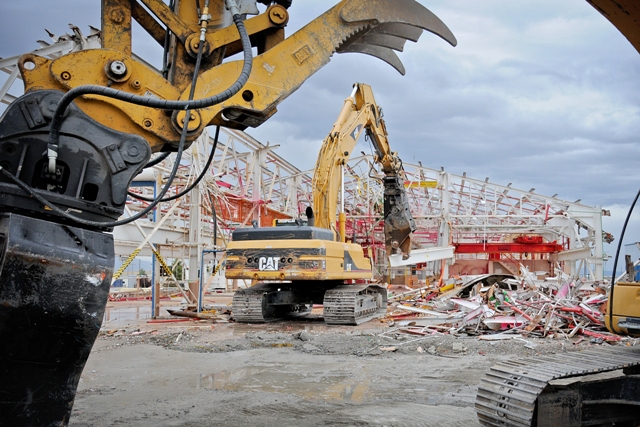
Recovery Act Accelerates Idaho Site Cleanup, Leads to Numerous Accomplishments

Recovery Act workers demolished an old spent nuclear fuel reprocessing building in summer 2010.